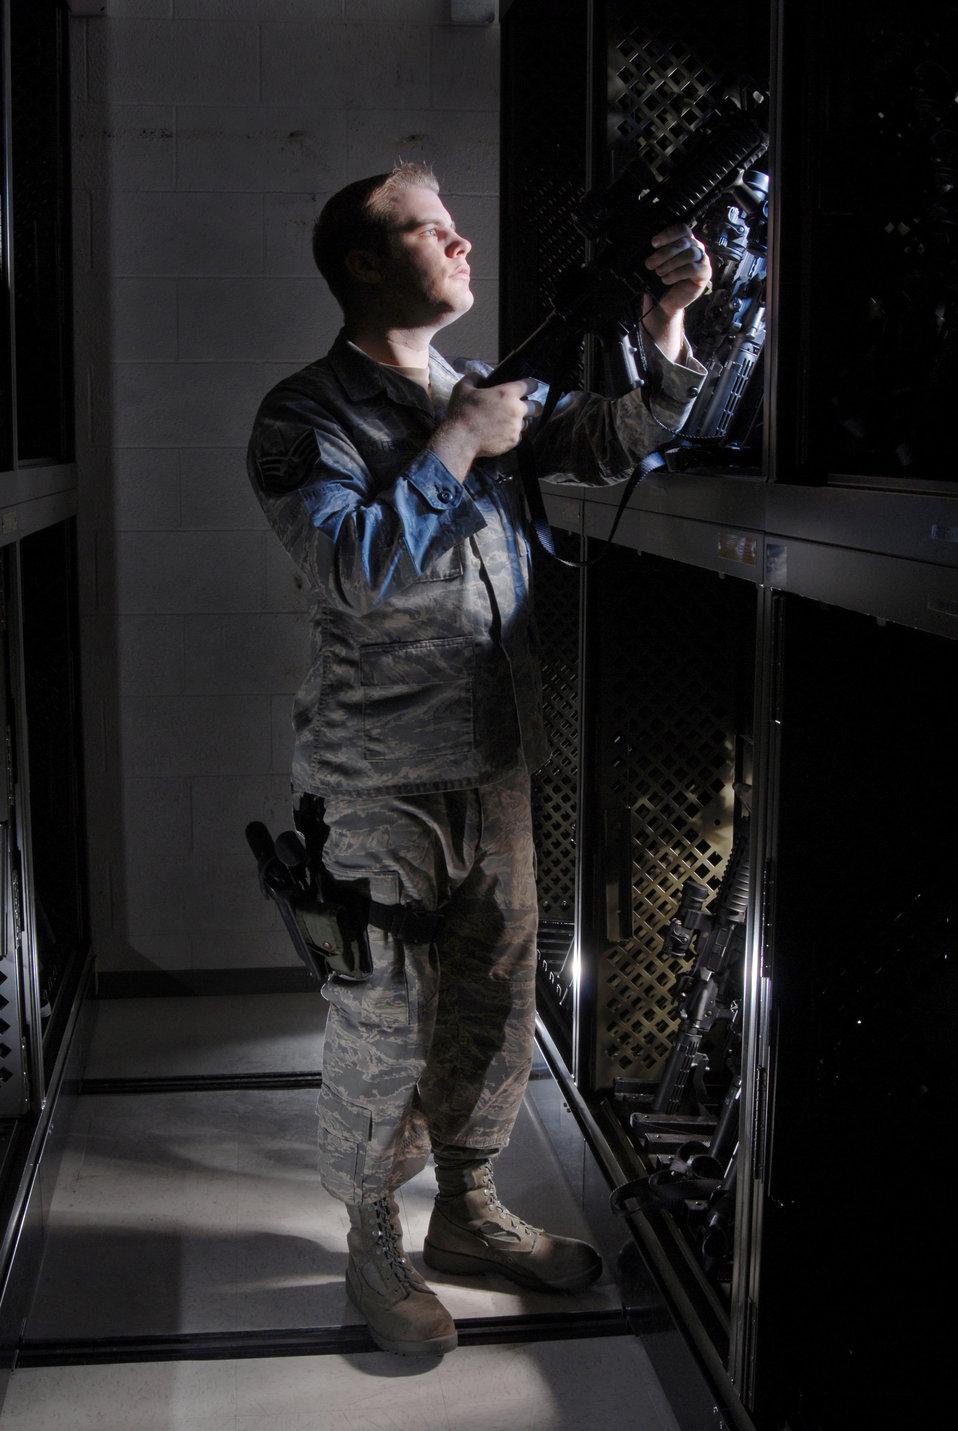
Force protection

Staff Sgt. Andrew Fennell visually inspects the M-68 scope on a 5.56 mm M-4 carbine rifle at the armory at March Air Reserve Base, Calif., on Feb. 28. The 452nd SFS provides force protection programs to include weapon system security, police services, resource protection and antiterrorism for the 452nd Air Mobility Wing at March ARB. They also maintain a wartime and contingency rapid deployment capability to conduct force protection operations worldwide. Sergeant Fennell is an armorer from the 452nd Security Forces Squadron.